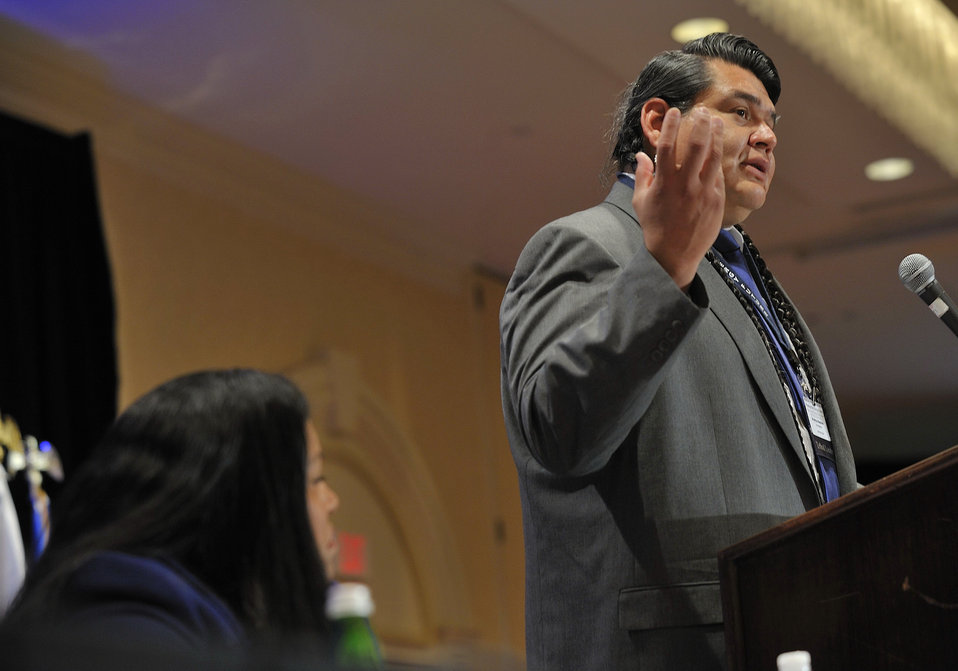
Tribal Energy Summit

Nez Perce Chairman Brooklyn Baptiste shares progress on capacity-building during Hanford clean-up and other issues.